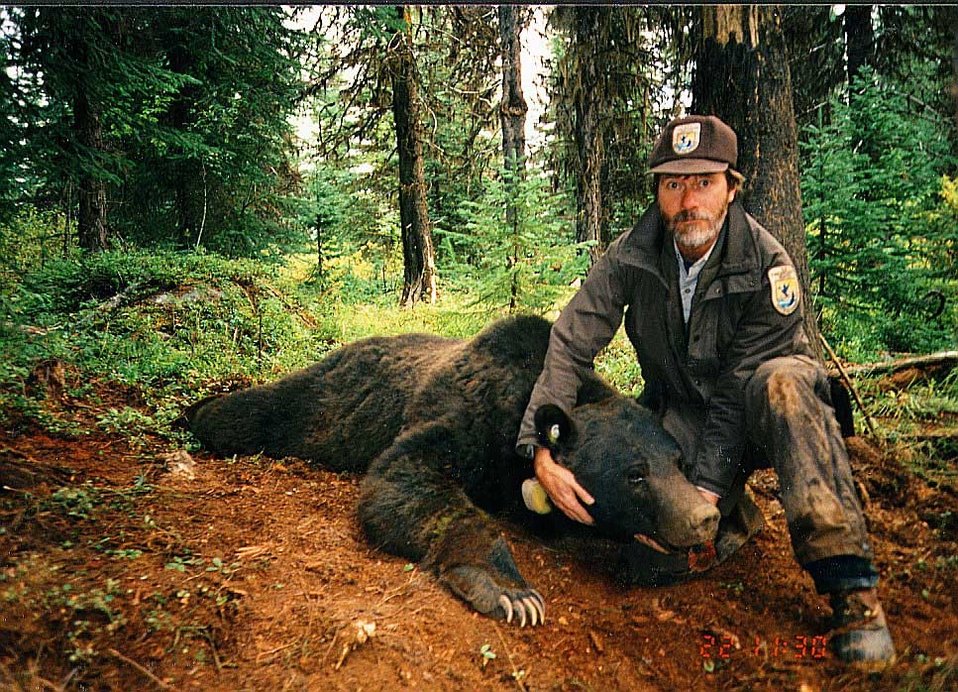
Adult male grizzly bear

USFWS employee Wayne Kasworm with a sedated adult male grizzly bear (Ursus arctos horribilis). Grizzly bears are listed as threatened under the Endangered Species Act.